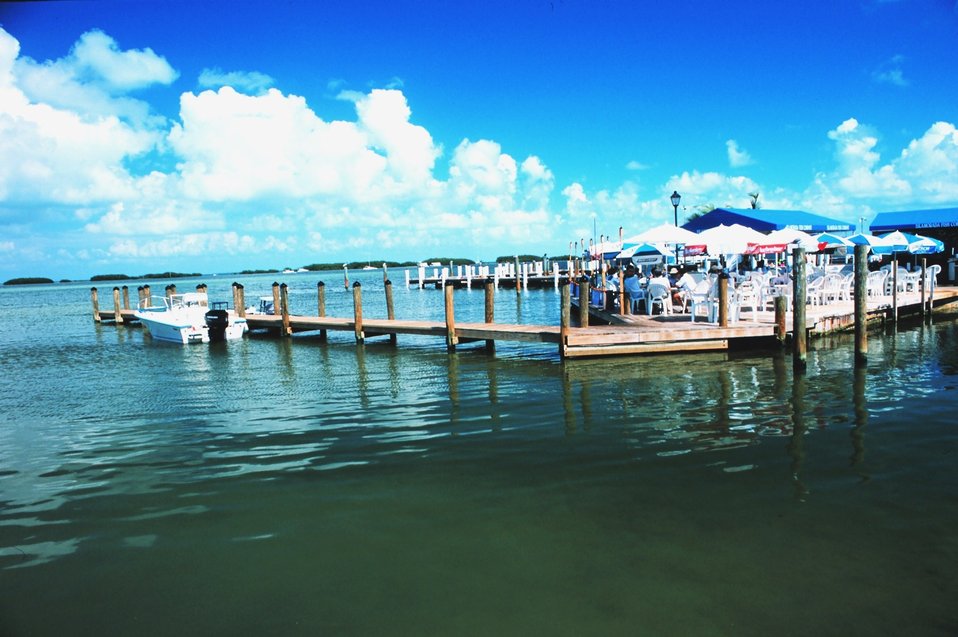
A pier at Islamorada Fish Co. restaurant and market